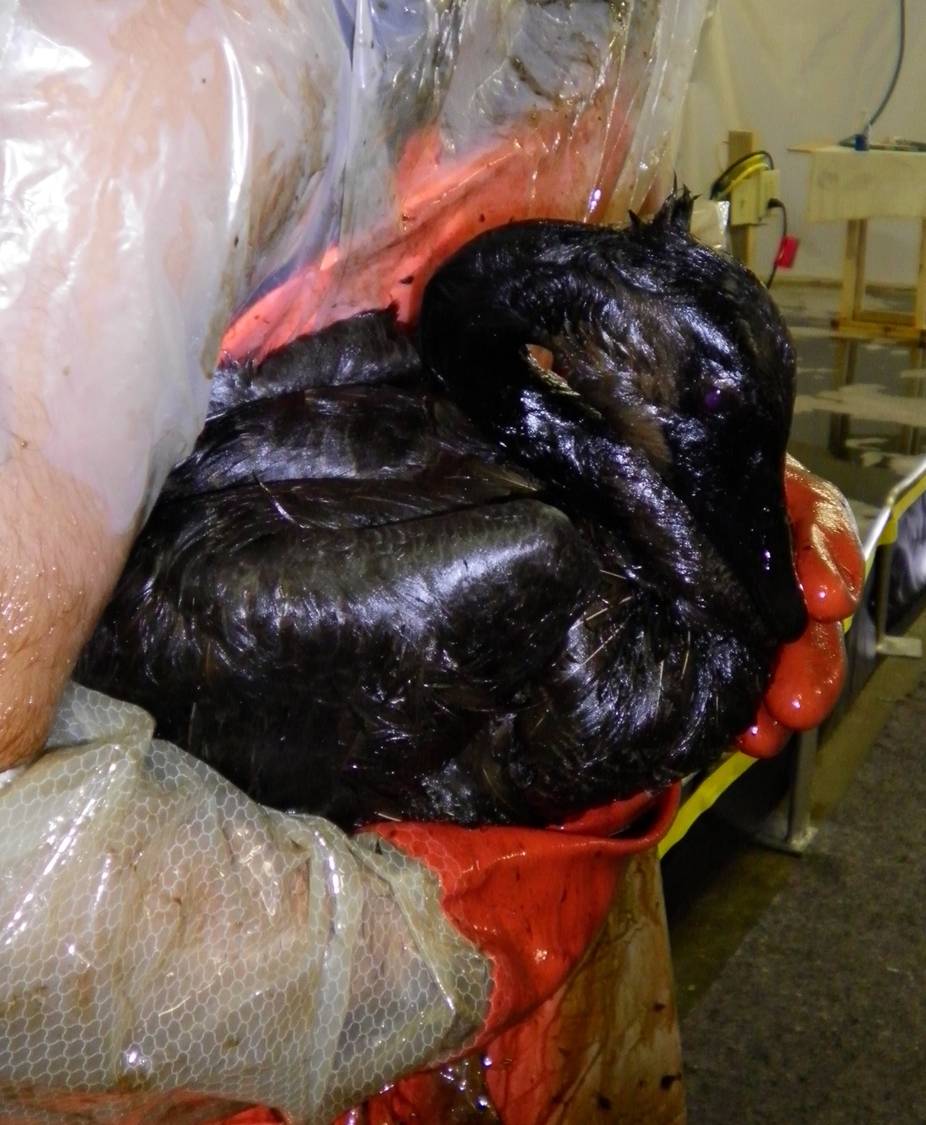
Oiled Goose

A volunteer prepares to clean oil from the feathers of a heavily-oiled Canada goose at the Wildlife Rehabilitation Center in Marshall, Michigan.